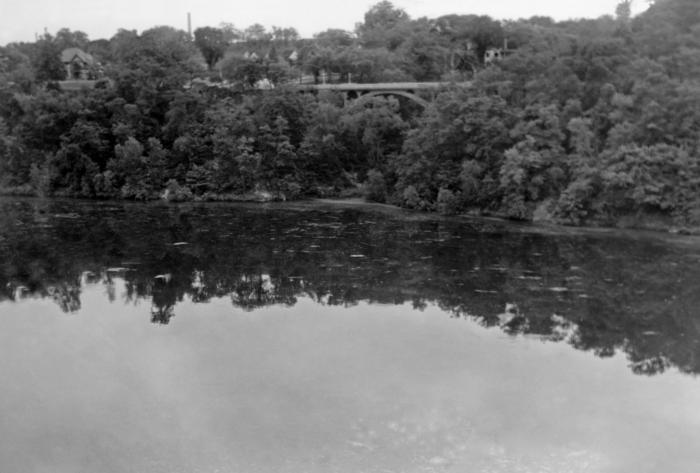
This was a historic view of the Mississippi River from its west bank, about 500 feet north of the Lake Street Bridge, in Minneapolis, Minnesota, June 4, 1933. It was taken during a Minnesota Department of Health study of the public bathing and recreation areas along the river.